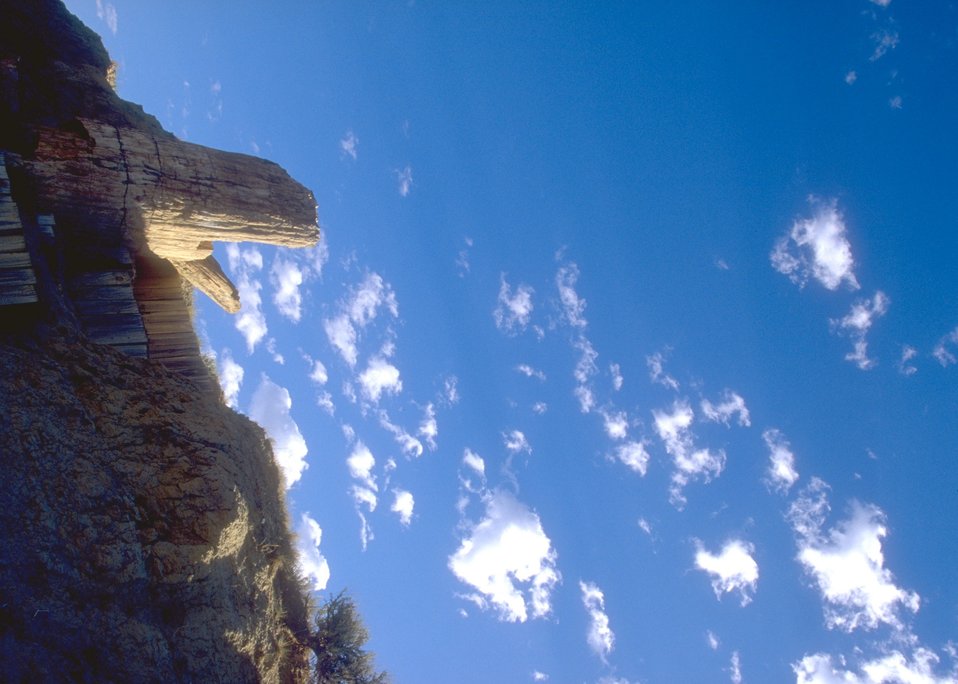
Dry Creek Petrified Tree Area, Buffalo Field Office.